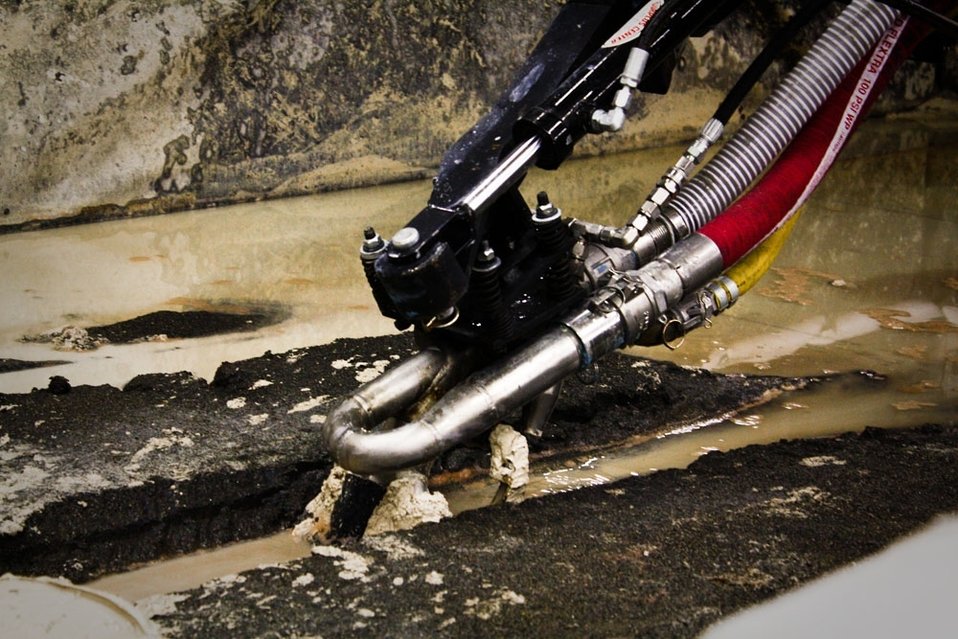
ARRA-funded technology aims to improve waste removal from Hanford tanks

Engineers show off the MARS vacuum retrieval system to a group of stakeholders at a recent demonstration. The ARRA-funded technology is expected to improve tank waste retrieval at Hanford.